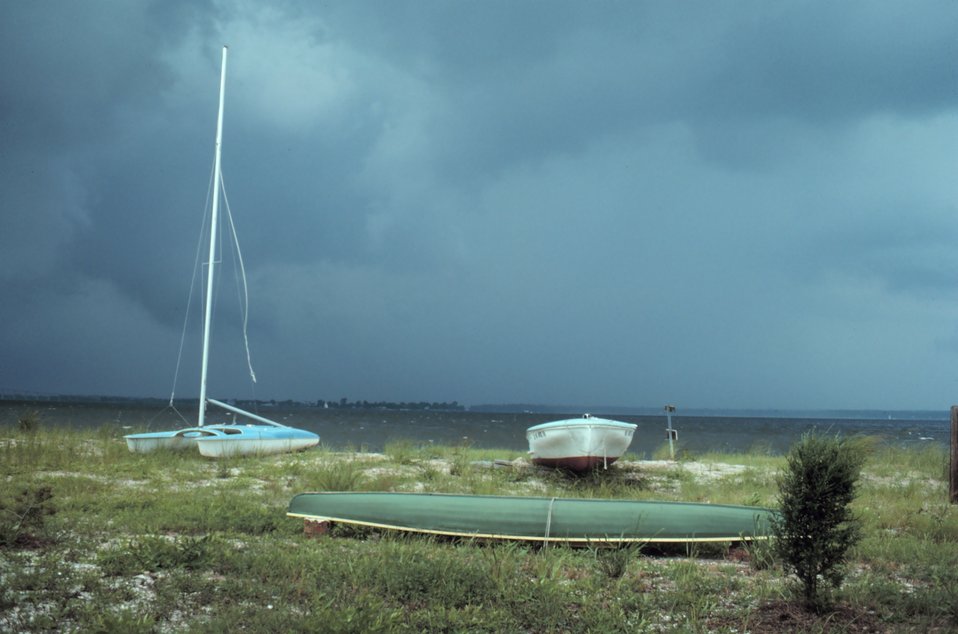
A storm building over the Patuxent River.